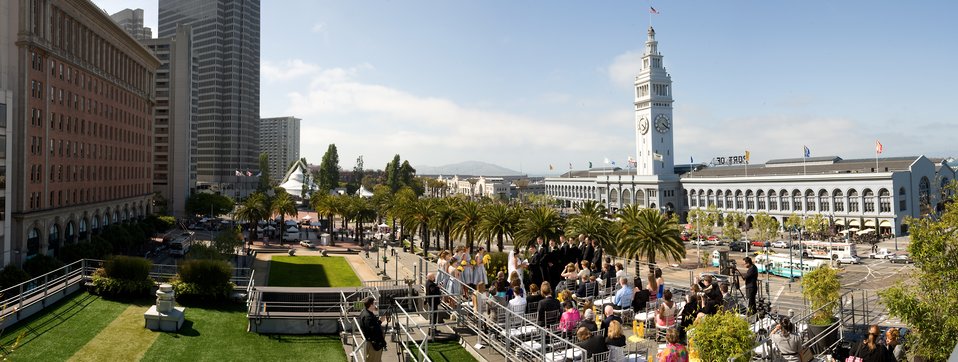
San Francisco Dream Wedding

This four-photo merge shows the wedding ceremony for Vanessa Muza Teskey and Capt. Mike Hawkins May 14, 2010, on the rooftop of the Hotel Vitale on San Francisco's waterfront. The couple won the San Francisco Dream Wedding Giveaway with viewer votes. Mrs. Hawkins has been diagnosed with stage IV Hodgkin's lymphoma. Vendors donated $100,000 of goods and services to the couple's wedding day.